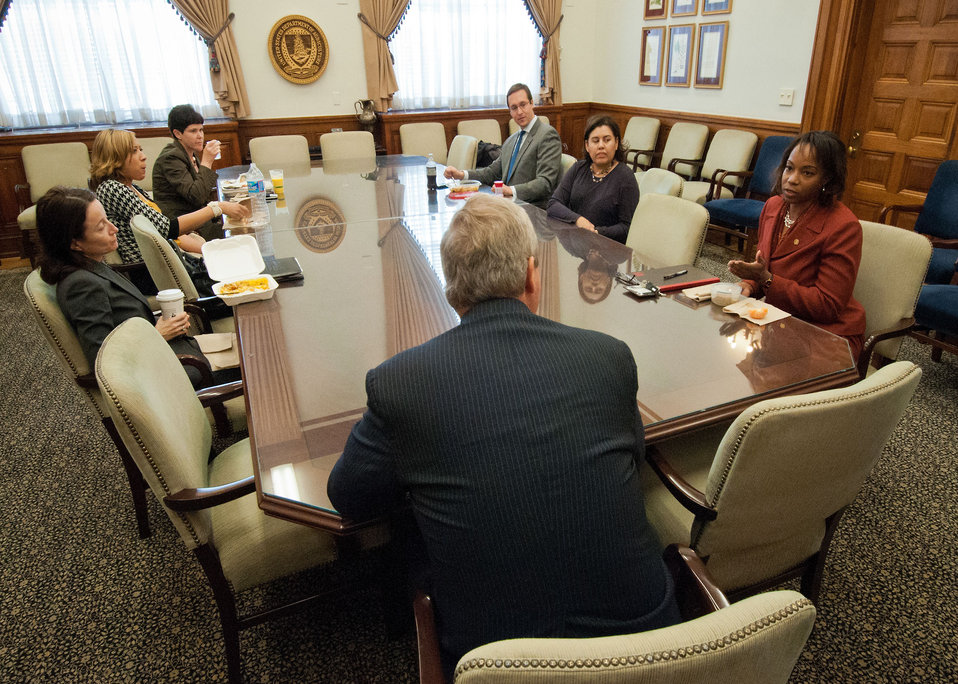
Agriculture Secretary Tom Vilsack meets with U.S. Department of Agriculture (USDA) employees for a Brown Bag lunch to gain information and knowledge to assist in the administration of the affairs and programs of the Department, and to thank the employees for their dedication and diligence in Washington, D.C. on Wednesday, Sept. 26, 2012. (L to R Agriculture Secretary Tom Vilsack, USDA Rural Development (RD) Rural Utilities Service (RUS) Deputy Administrator Jessica Zufolo, USDA Agriculture Research Service (ARS) Program Analyst Tracy Troutman, USDA Chief of Staff Krystal Hardin, USDA Scheduling Deputy Director Toby Osherson, USDA Rural Development (RD) Senior Advisor Sylvia Bolivar, and USDA Chief Privacy Office Ravoyne Payton).